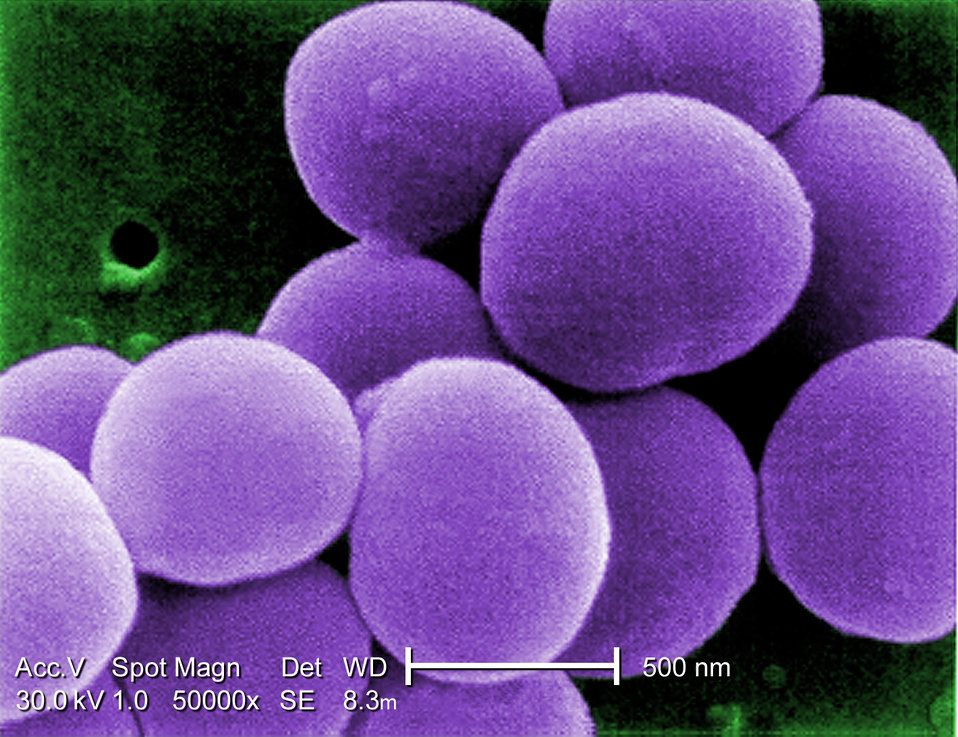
Under a very high magnification of 50,000x, this scanning electron micrograph (SEM) shows a strain of Staphylococcus aureus bacteria taken from a vancomycin intermediate resistant culture (VISA).